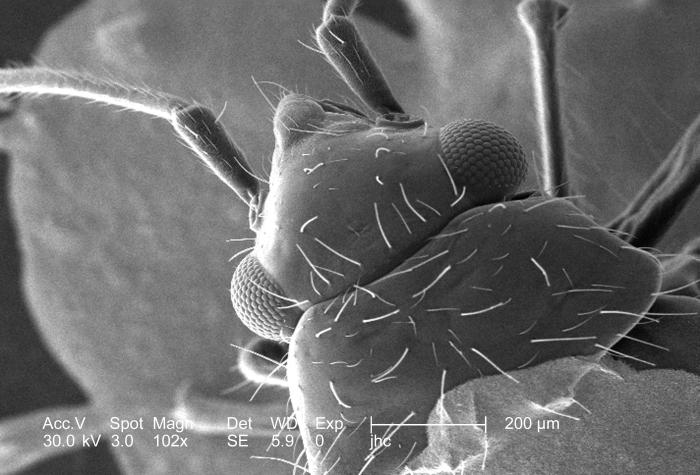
At a very low magnification of only 102x, this scanning electron micrograph (SEM) revealed the morphologic details displayed on the exoskeletal surface of an unidentified green bug, found deceased on the grounds in the suburbs of Decatur, Georgia, attached to a deceased, unidentified caterpillar. This image focused on the insect's head, and thoracic regions, and included the eyes, and antennae. The exoskeleton on insects is commonly adorned by a myriad of protuberances, some of which are to allow its owner to attract a mate, others to detect changes in its environment, and still others to act as protective mechanisms by which the organism can thwart a foe, or avoid being eaten by a predator. At this low magnification, the insects sensorial "hairs", or "setae" are visible, which allow the organism to detect changes in environmental temperature, tactile stimuli, and chemical queues.